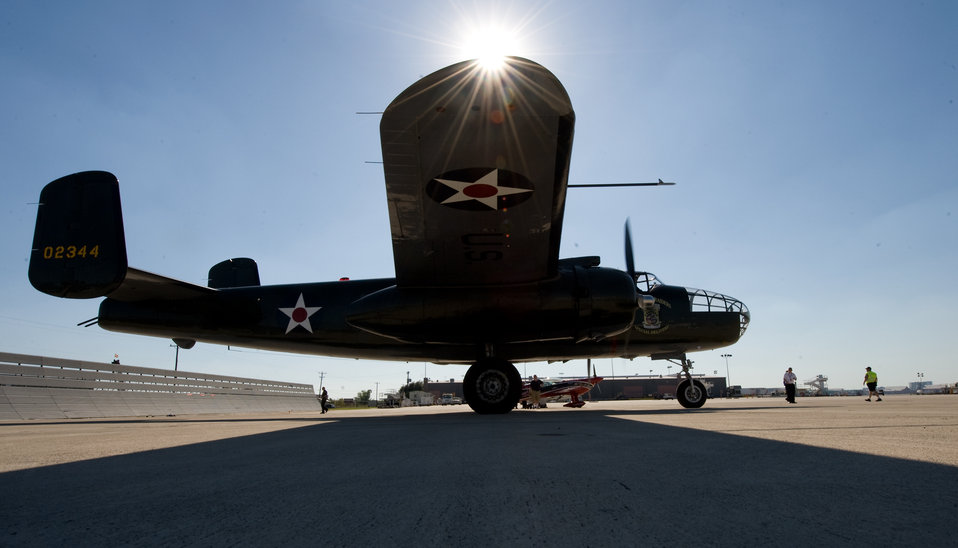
Warrior Flight